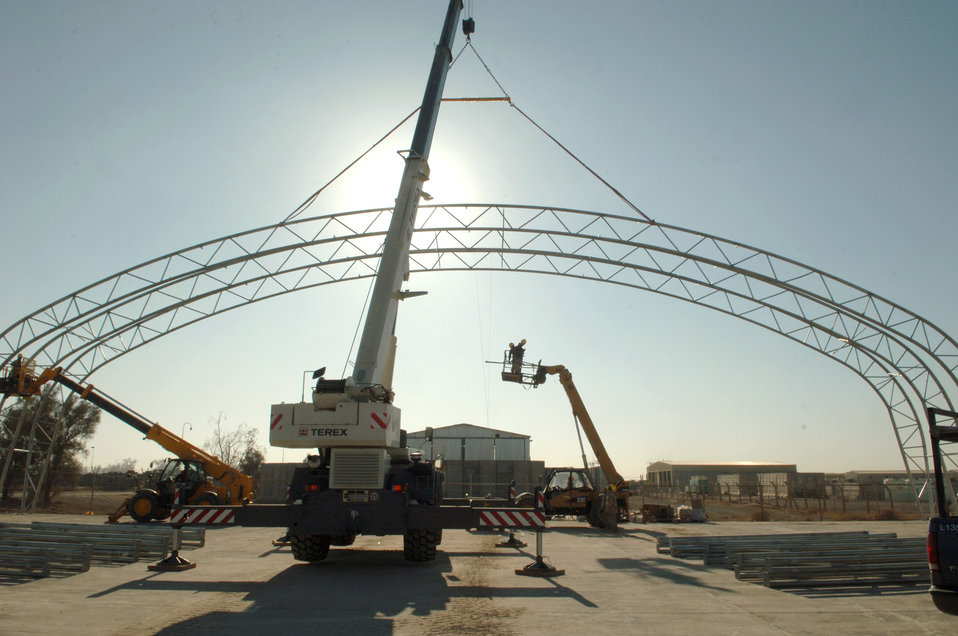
Shelter construction

Airmen from the 332nd Expeditionary Civil Engineer Squadron Structures shop continue construction Nov. 26 on the new Hunter Unmanned Aerial Vehicle shelter. The 20-day project at Balad Air Base, Iraq., will take approximately 3,200 man hours to complete.